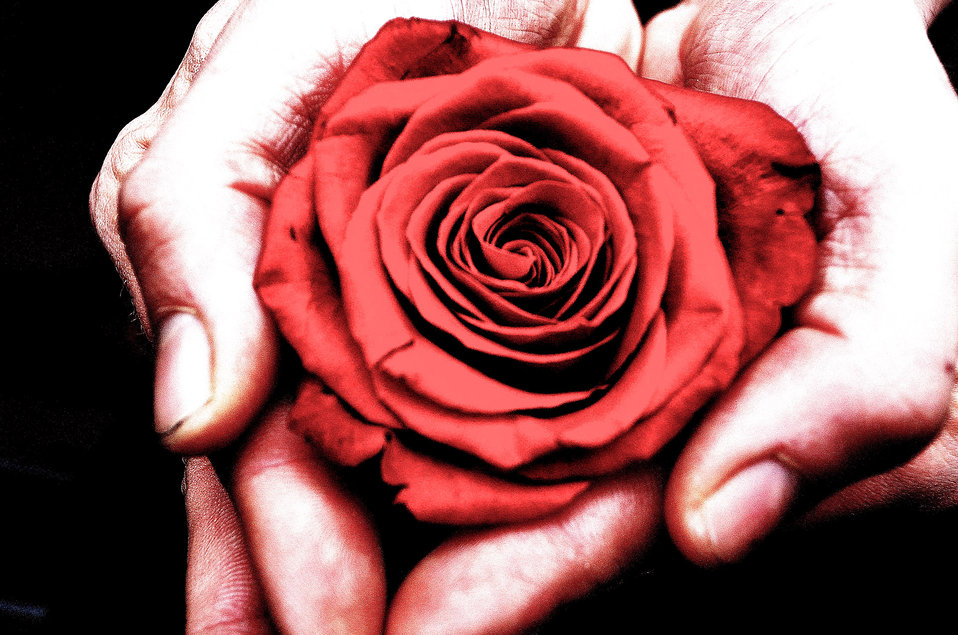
Rose in the hands.